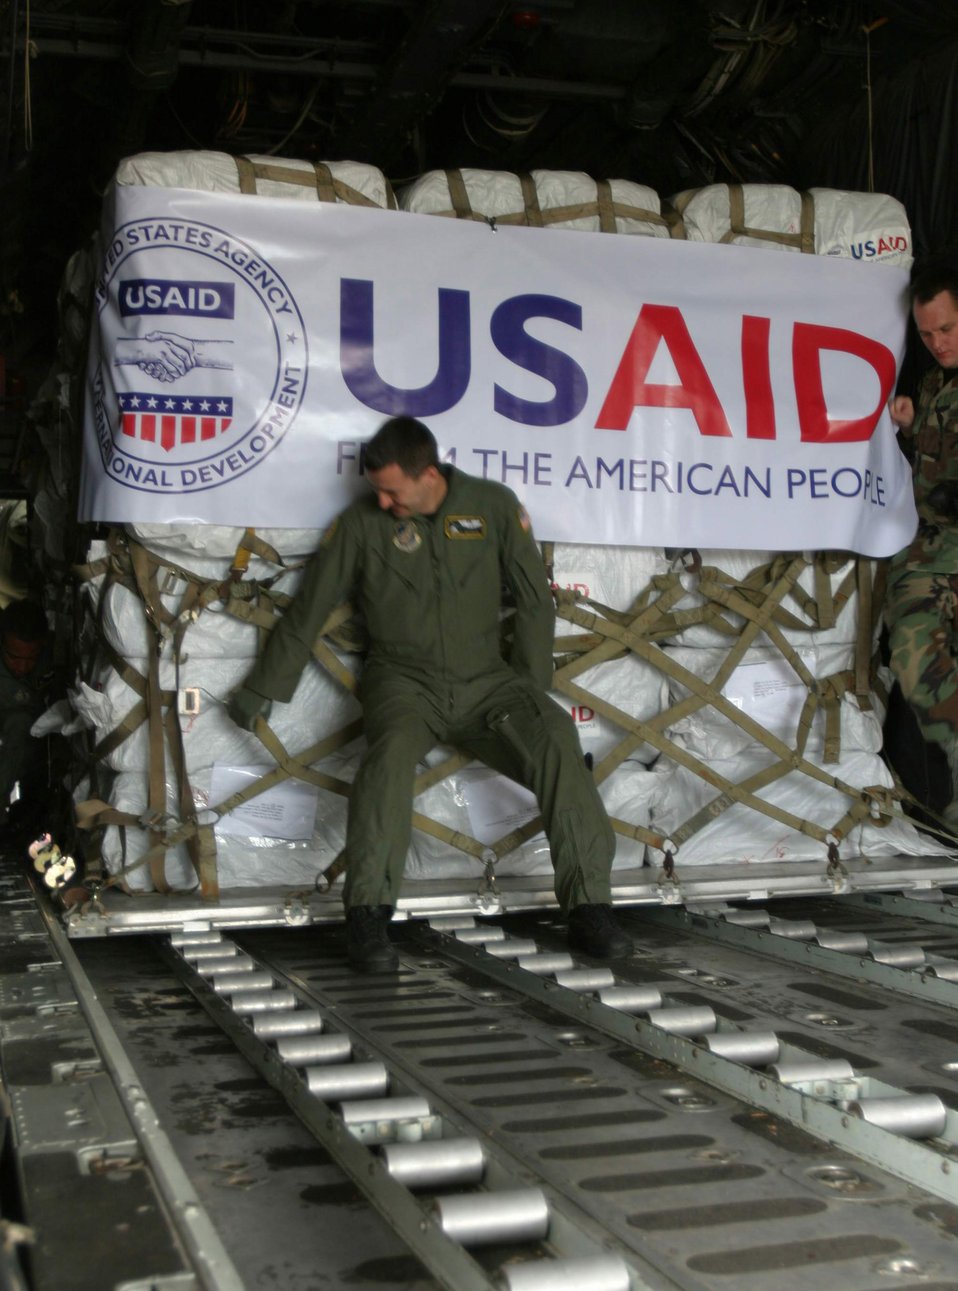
It's a tight fit

Senior Airman Daniel Mortensen secures a pallet May 12 in a C-130 Hercules at Utapao Air Base, Thailand. The supplies are headed to Burma as part of Joint Task Force Caring Response.